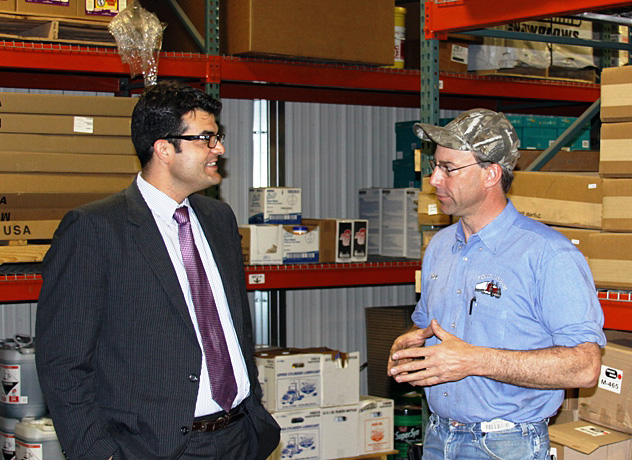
5-22 Worthington

U.S. Department of Agriculture (USDA) Rural Development (RD) Rural Business-Cooperative Service (RBS) Acting Administrator John Padalino (left) visits with Ron Prins at Ron’s Repair in Worthington, MN on Thursday, May 31, 2012. Ron Prins started a truck repair business out of his home 22 years ago and using funds from a USDA RD Rural Business-Cooperative Service (RBS) Intermediary Relending Program (IRP) Loan Prins was able to move into a shop in Worthington 12 years ago. Prins started with five people on staff, which has grown to 22. A subsequent IRP loan in 2005 helped Prins expand his Worthington shop, adding a separate area for displaying parts and accommodating for the growth of his business.